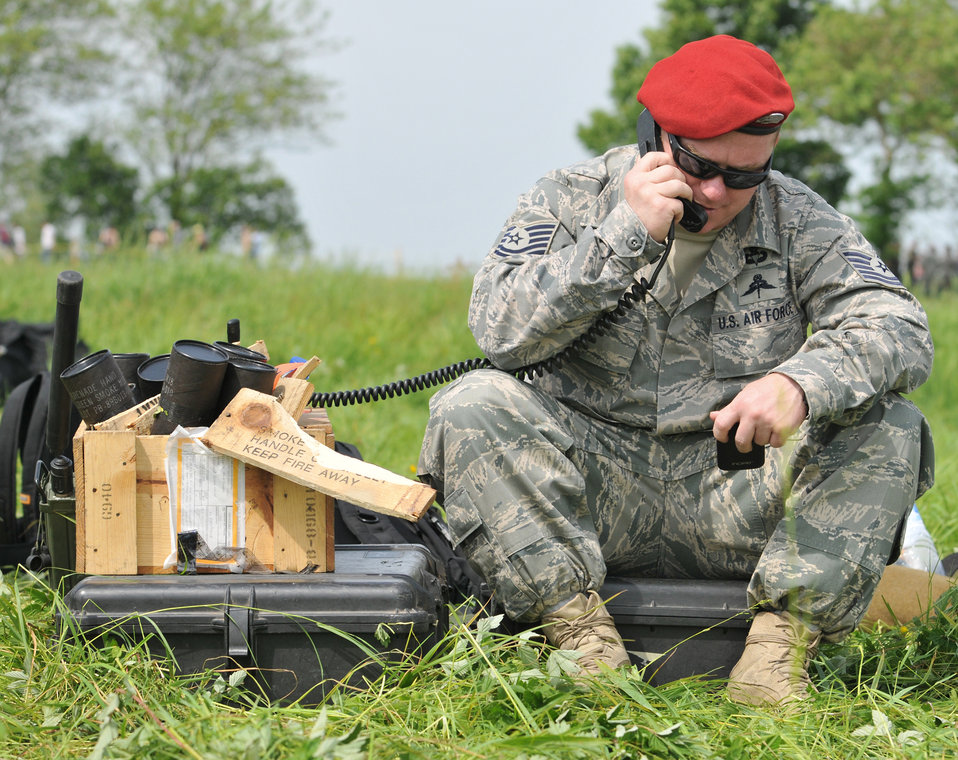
D-Day 66th anniversary

A member of the 321st Special Tactics Squadron relays wind direction and other pertinent information to aircraft during a jump demonstration June 5, 2010, over Normandy, France. The squadron is assigned to Royal Air Force Mildenhall, England.